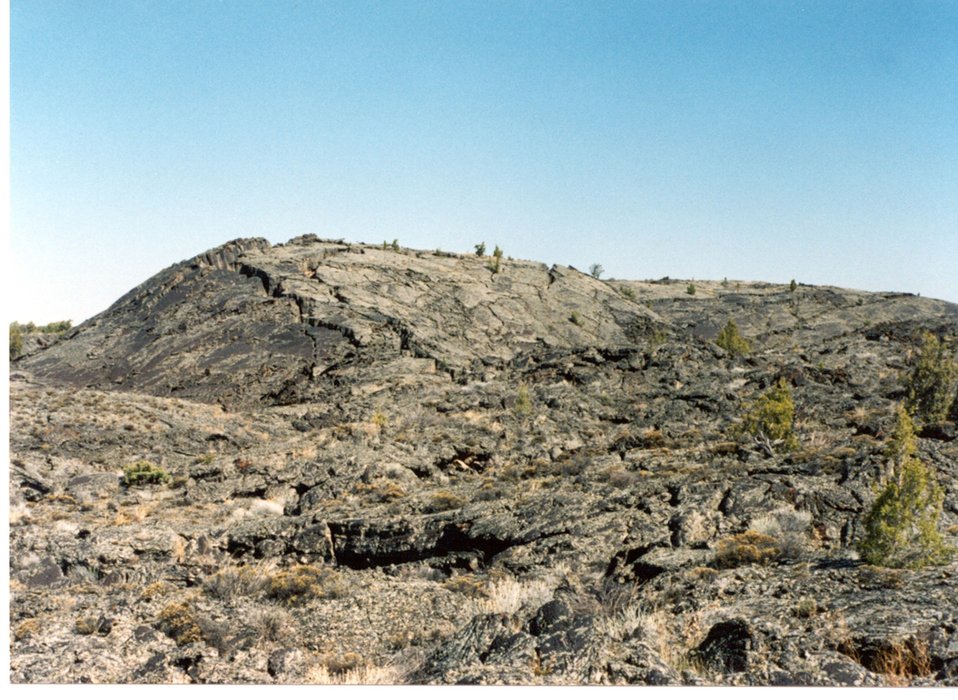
Pressure Ridge in Wapi Flow Rift Hike Craters of the Moon Shoshone Field Office USRD Upper Snake River District